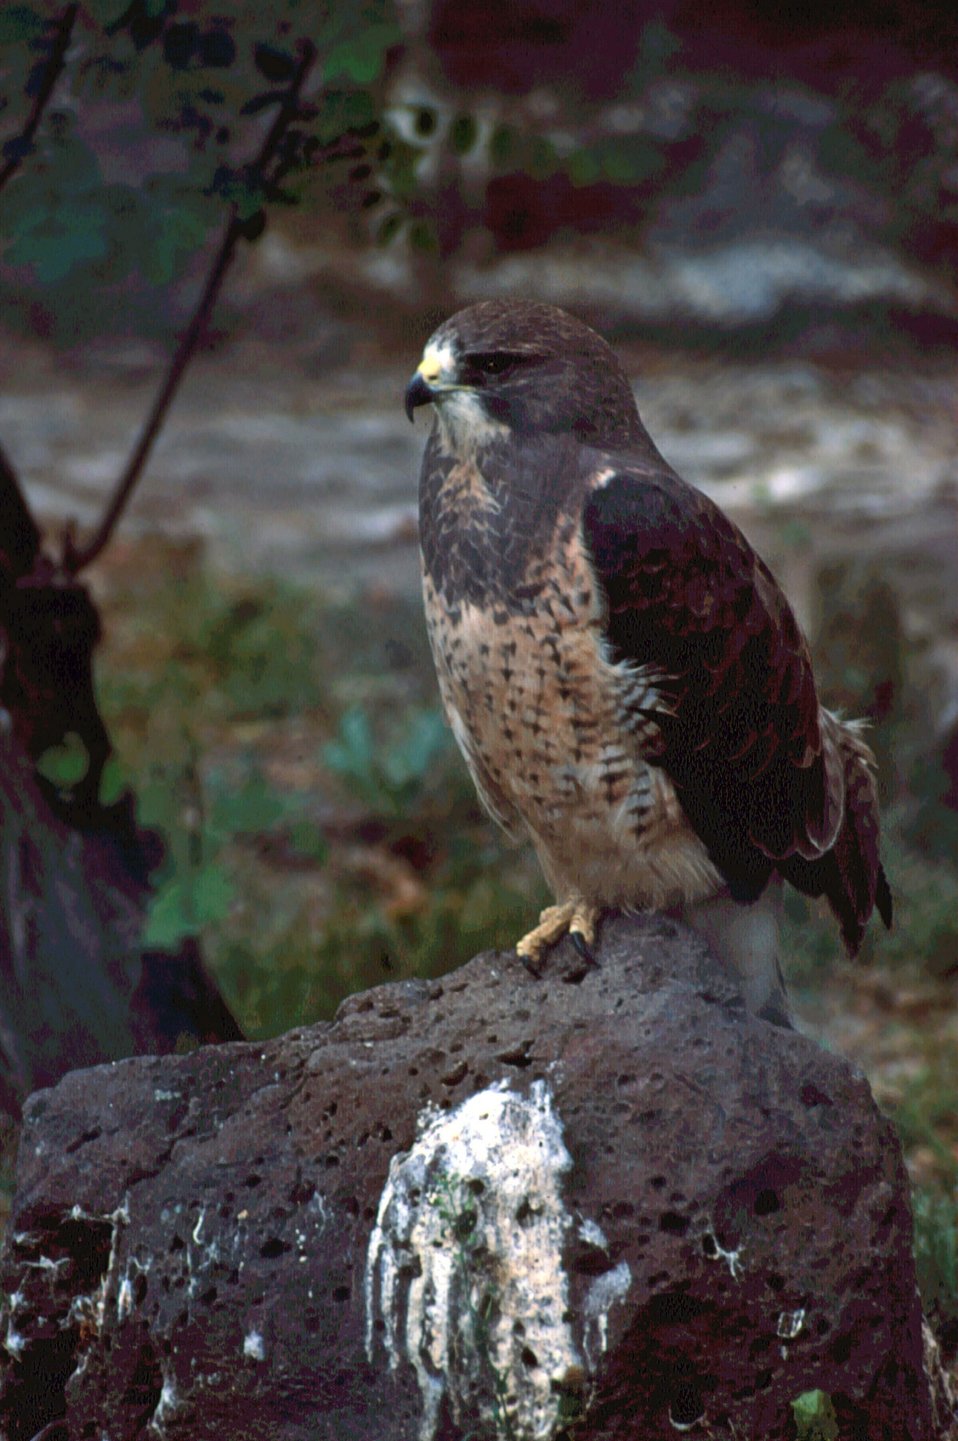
Prairie Falcon on BLM Vale District.